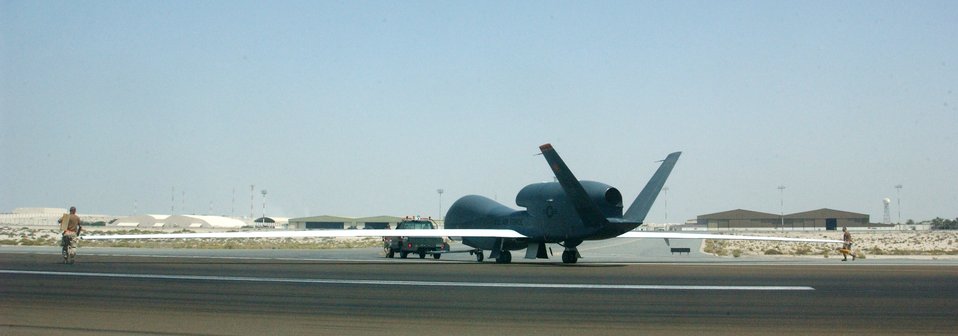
Global Hawk, global mission

Airmen from the 12th Reconnaissance Squadron and 380th Expeditionary Maintenance Group tow a Global Hawk unmanned aerial vehicle back to its hangar after a mission Oct. 3 at a deployed location in Southwest Asia. The Global Hawk can survey large geographic areas with pinpoint accuracy to give military decision-makers the most current information about enemy locations, resources and members.